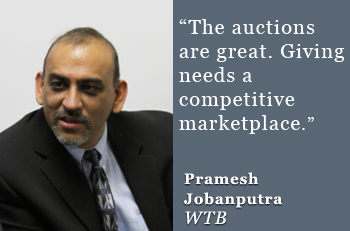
pramesh-jobanputra